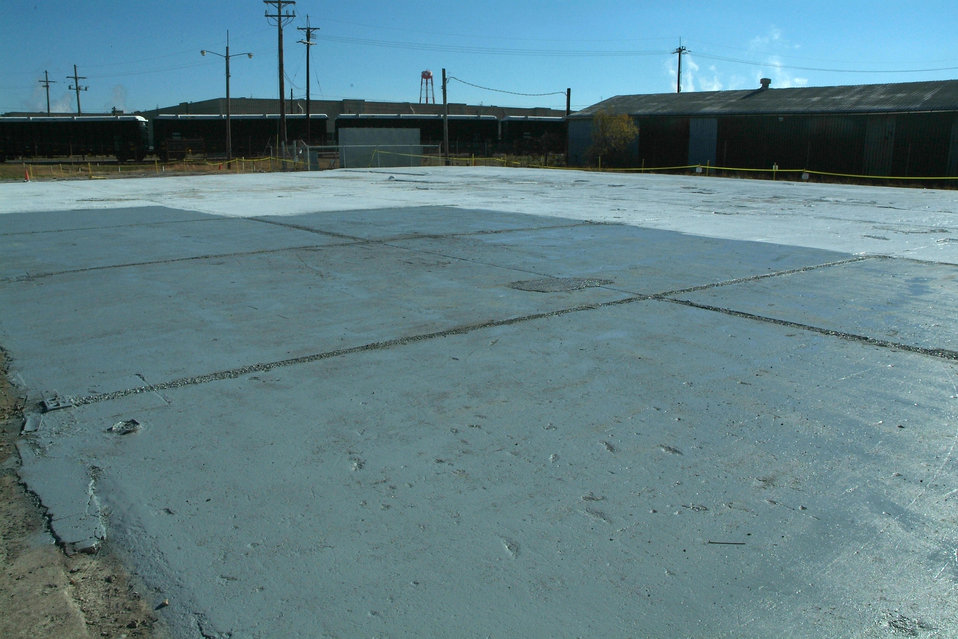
Smelter Demolition - Paducah

Cleaned and sealed slab after demolition.